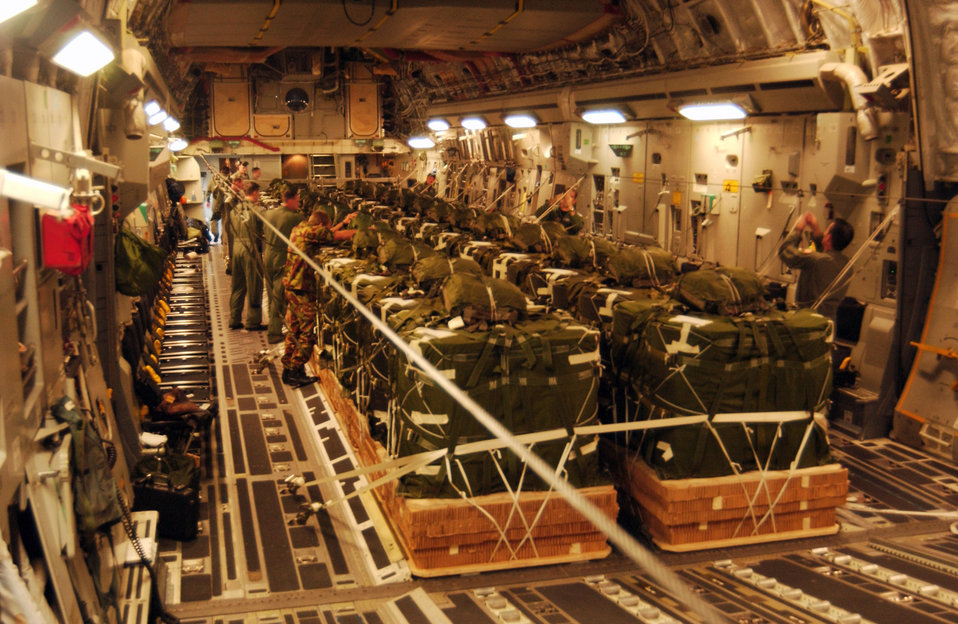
McChord Airmen fuel Operation Deep Freeze

Airmen and members of the New Zealand Defence Force secure supplies and inspect a load prior to a Dec. 1 airdrop mission to the Antarctic Gamburtsev Mountain Province. The Airmen and the C-17 Globemaster III are from McChord Air Force Base, Wash.